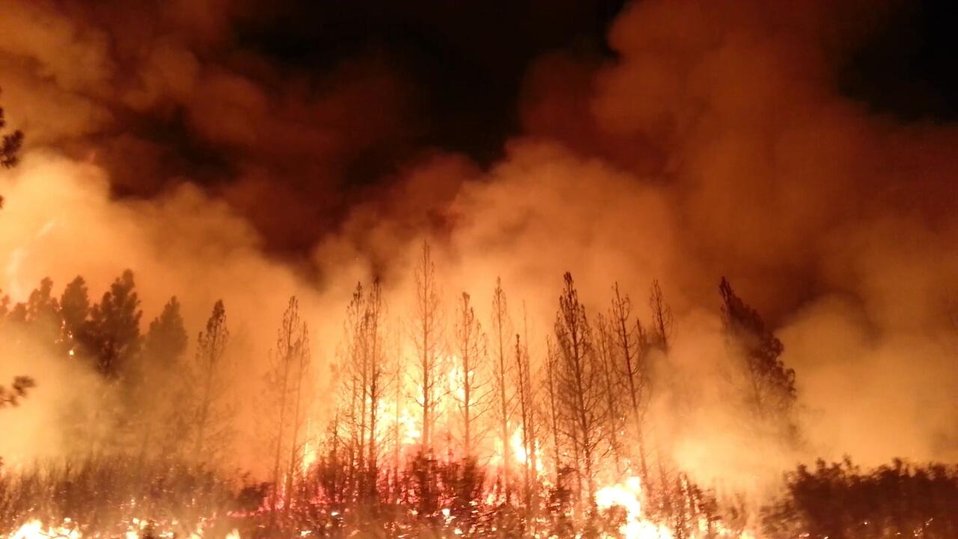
The Rim Fire in the Stanislaus National Forest near in California began on Aug. 17, 2013 and is under investigation. The fire has consumed approximately 149, 780 acres and is 15% contained.